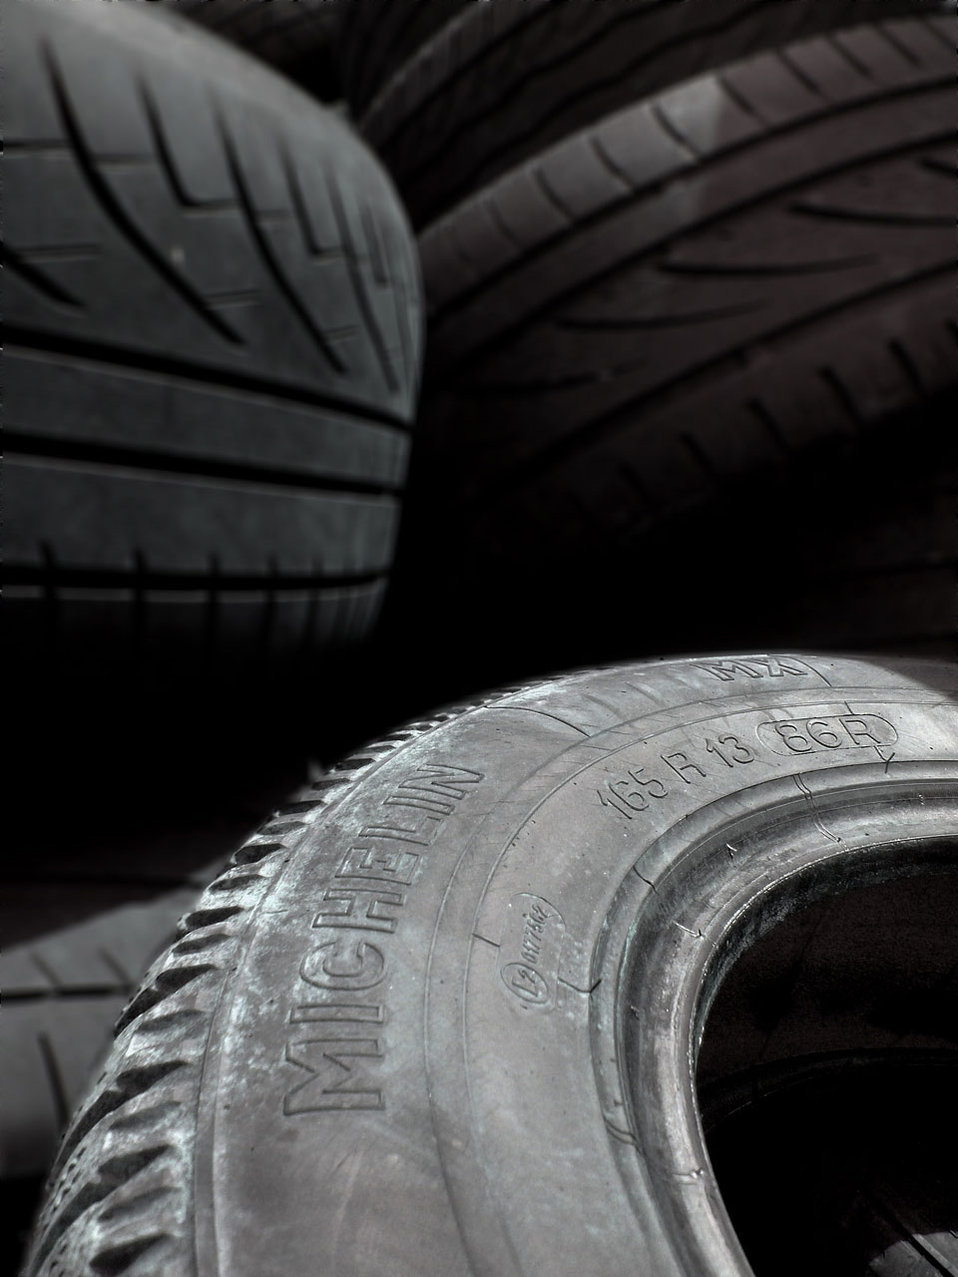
Tires

Used tires outside the garage.